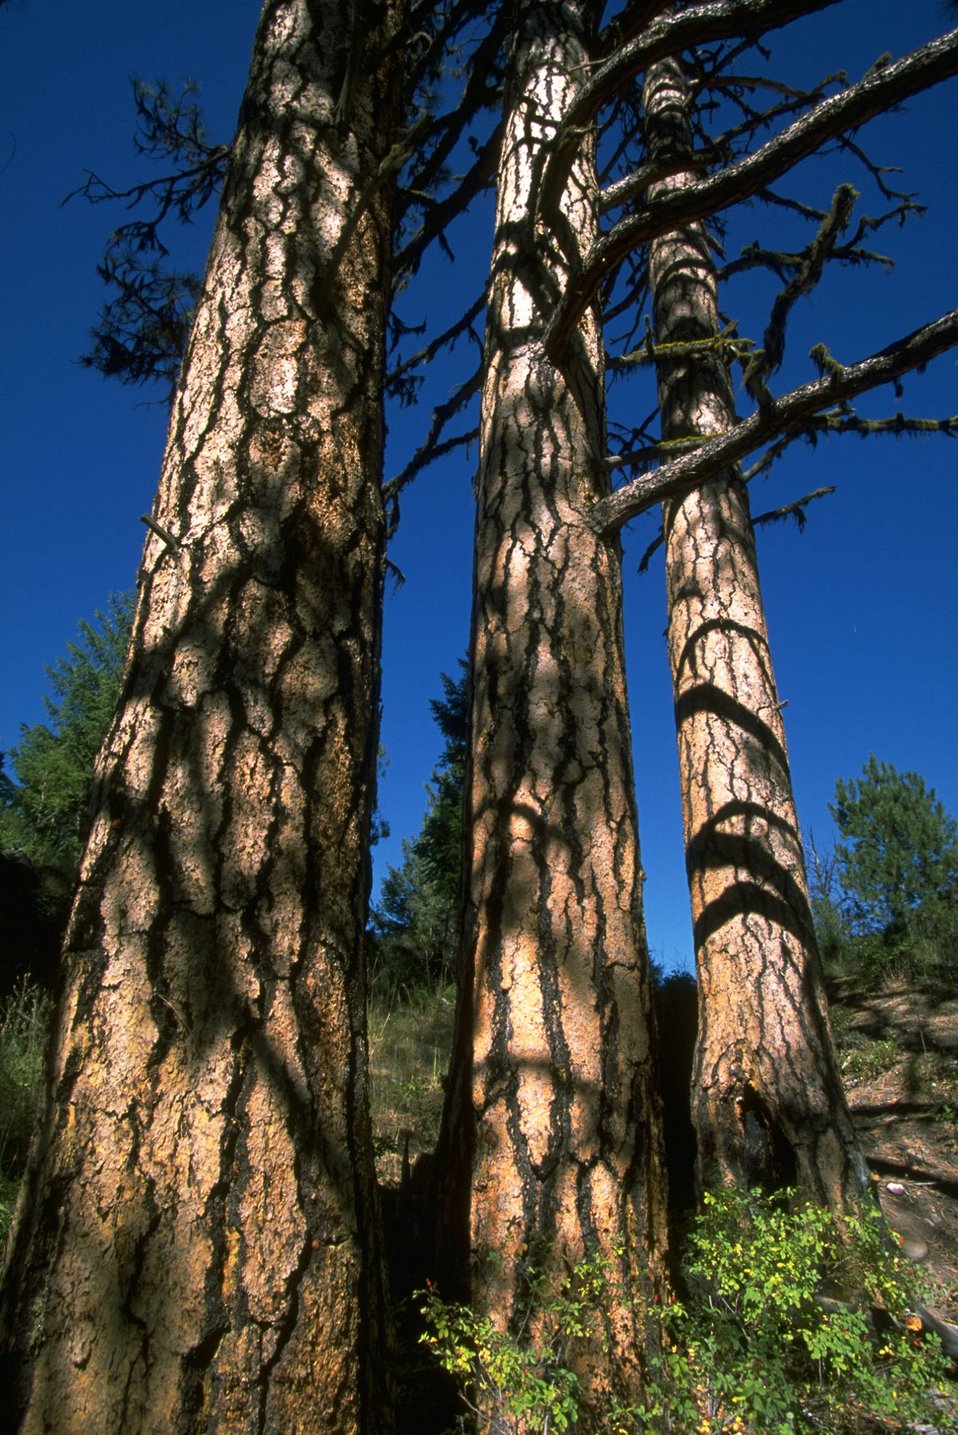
Old growth Pondersosa pine along Blackfoot River VERTICAL